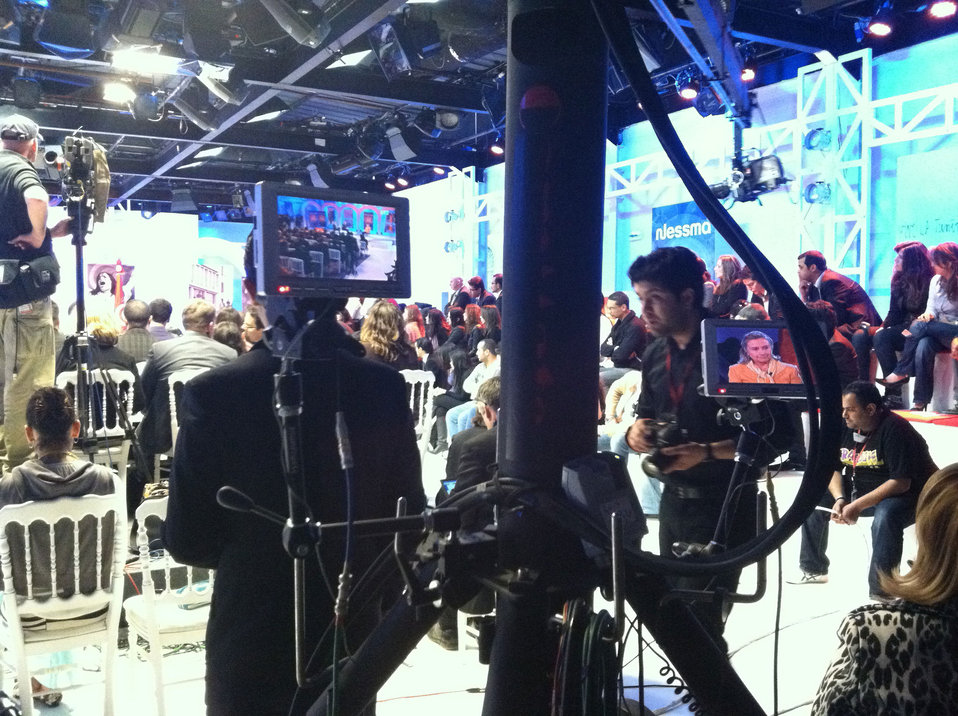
Behind the Scenes: Secretary Clinton Participates in a Townterview

Behind the Scenes: U.S. Secretary of State Hillary Rodham Clinton participates in a townterview with members of civil society at Nessma TV in Tunis, Tunisia, on March 17, 2011.